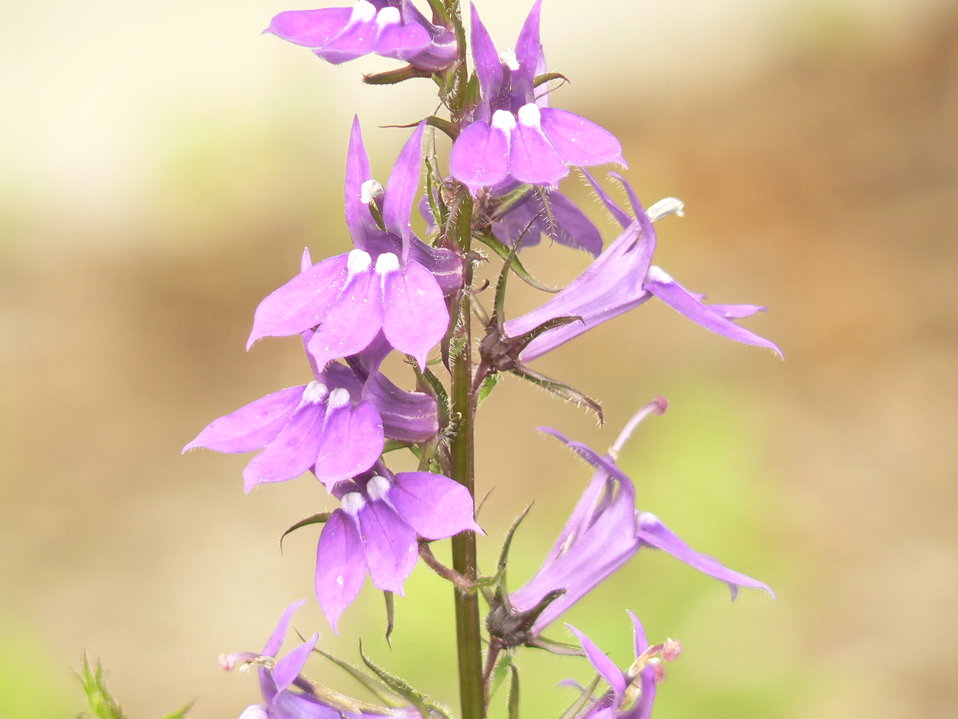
Spiked lobelia at Cape May National Wildlife Refuge.